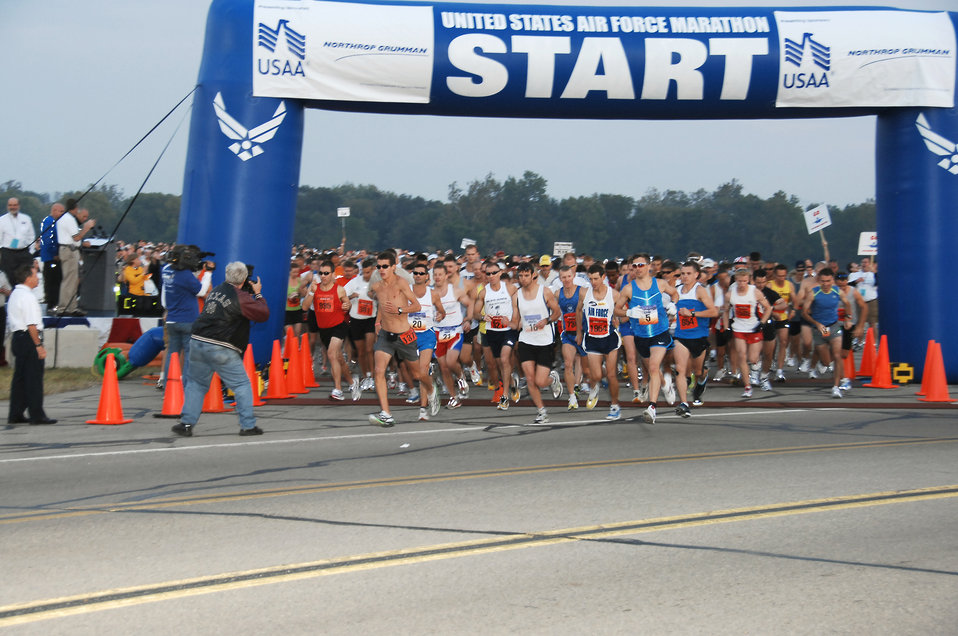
10,000th runner registers for Air Force Marathon

Runners take off at the starting line of the 2009 Air Force Marathon at Wright-Patterson AFB, Ohio, in this file photo. This year's 10,000th runner registered Aug. 12, 2010, meeting a long-standing event goal.